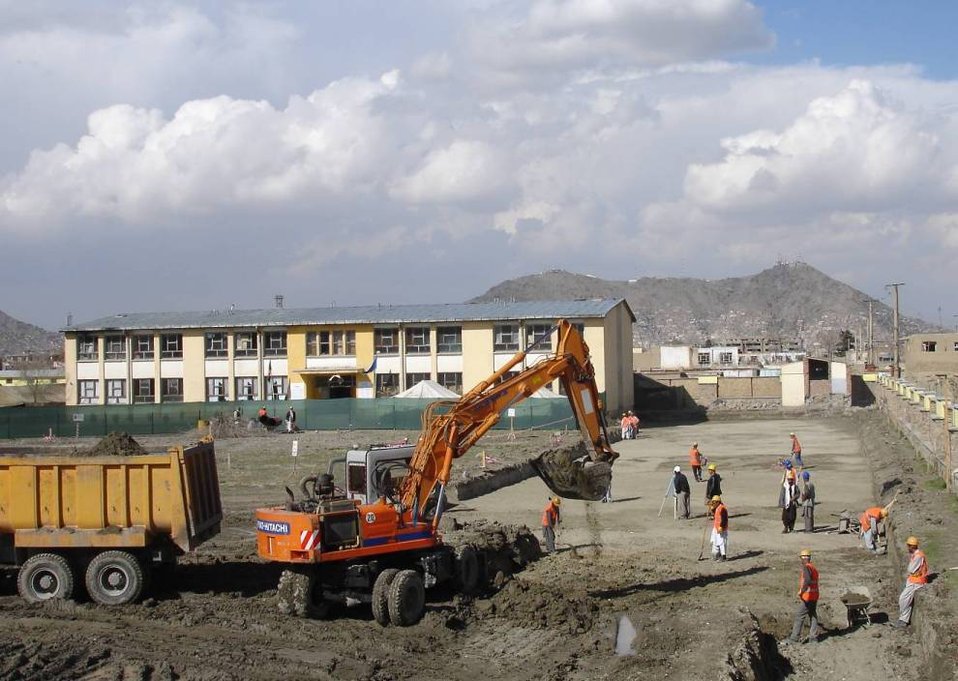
School construction